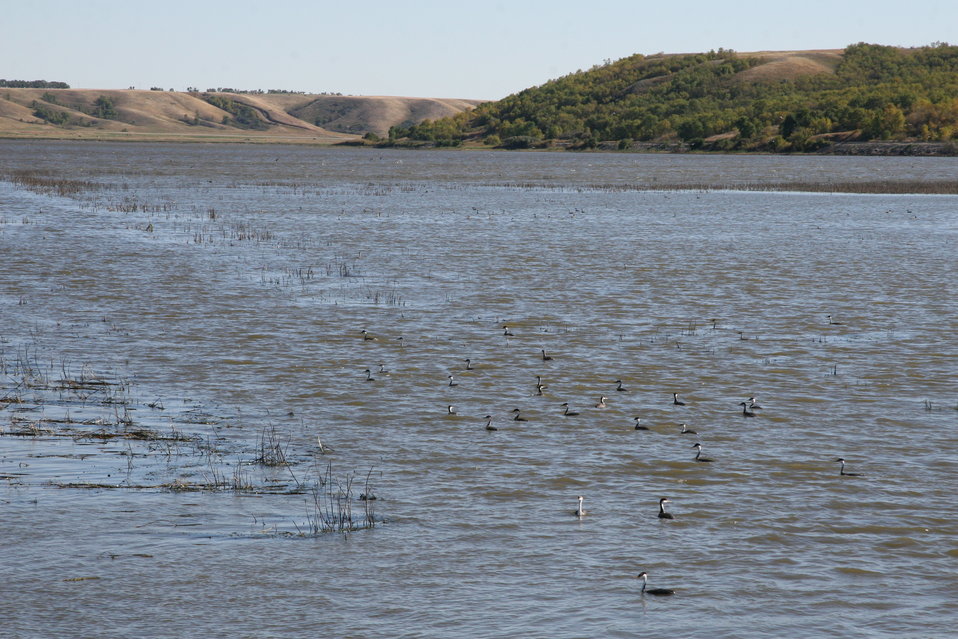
Western Grebes

The Western Grebe has black around the eyes and a straight greenish-yellow bill whereas the Clark's Grebe has white around the eyes and an up-turned bright yellow bill.